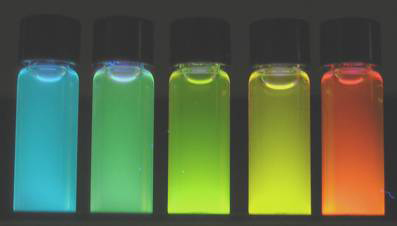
Quantum Dots

Brightly glowing vials of highly luminescent, water soluble quantum dots produced by the new NIST microwave process span a wavelength range from 500 to 600 nm.